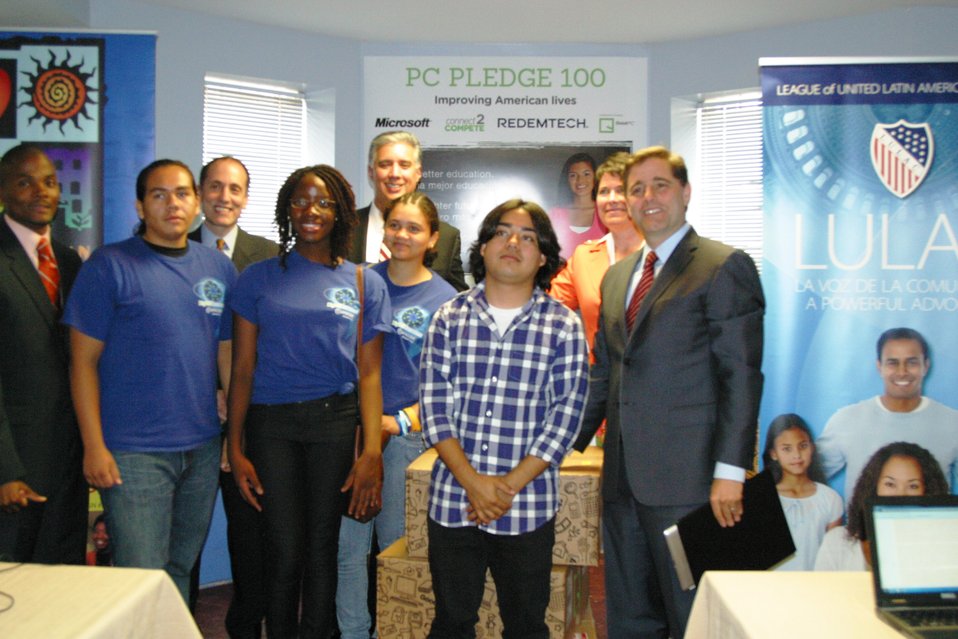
Connect 2 Compete: LULAC 8.7.12

FCC Chairman Genachowski, Ben Hecht, Chairman, Connect2Compete, Jill Vaske, Executive Vice President, Redemtech, Elliott Gaskins, Chief Development Officer, LAYC, & Darryl Morin, State Director, LULAC with kids from the League of United Latin American Citizens (LULAC) and the Latin American Youth Center (LAYC).